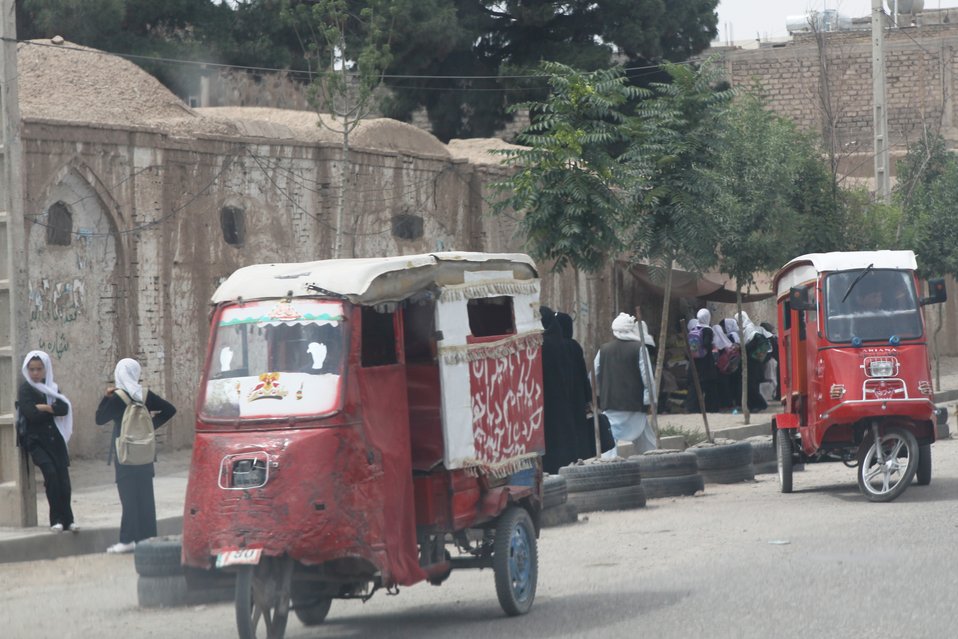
100525 Hirat Marble Conference 587